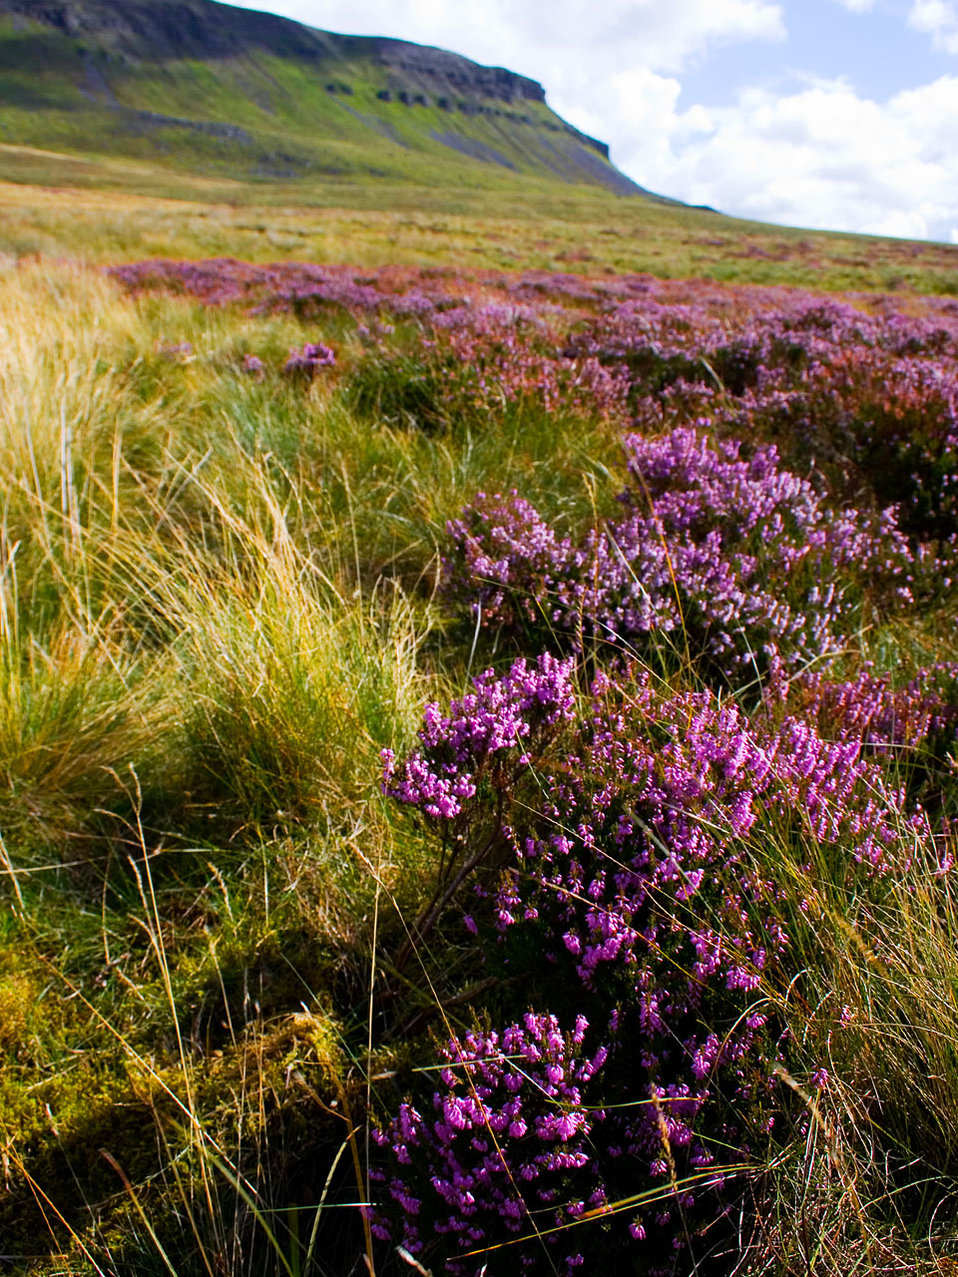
Heath

A walk in lake district.